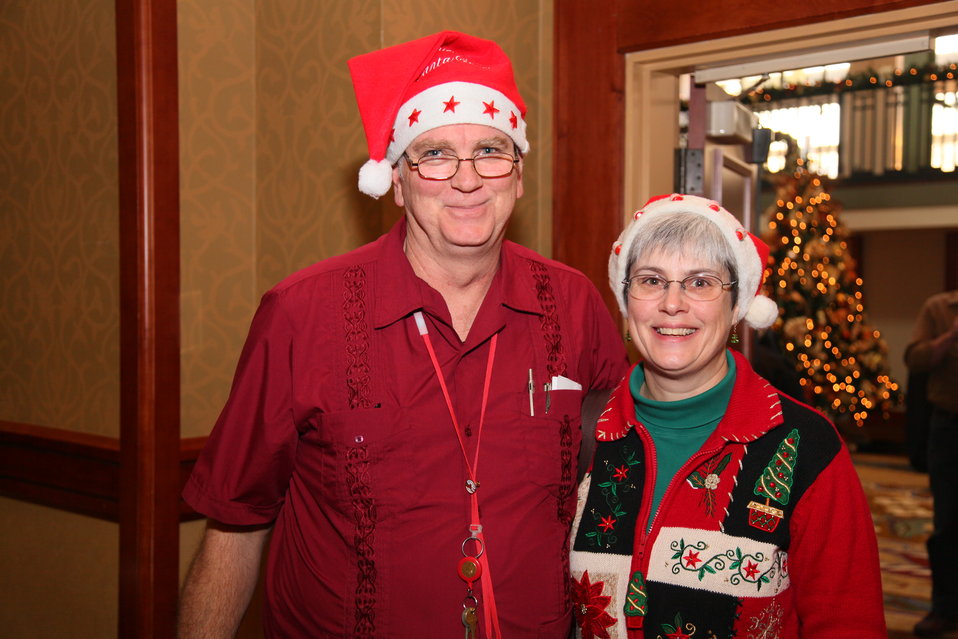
Sacramento District Holiday Party 2011